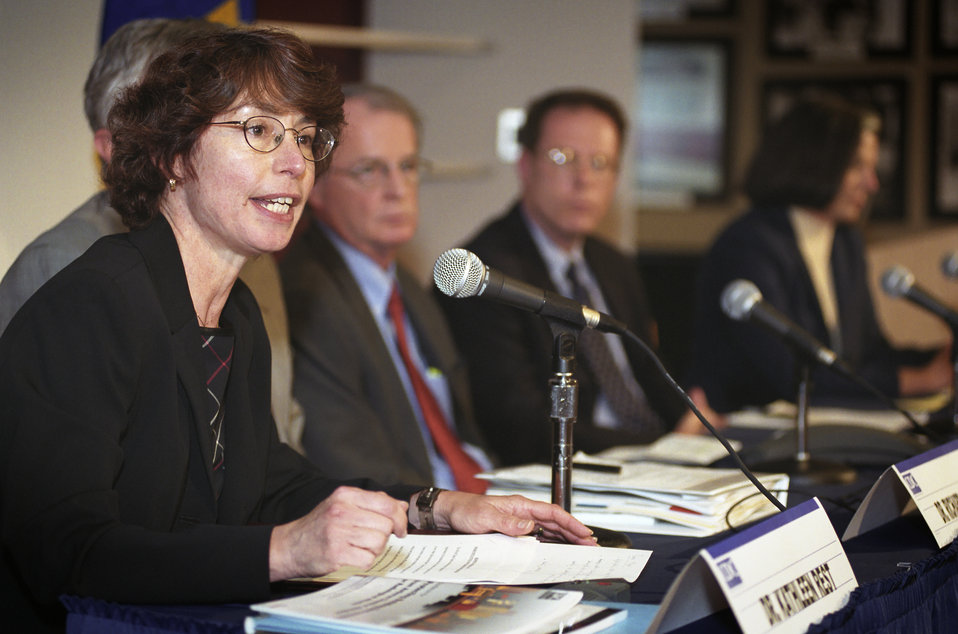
Centers for Disease Control and Prevention Bioterrorism Preparedness Press Briefing, August 27, 2002.